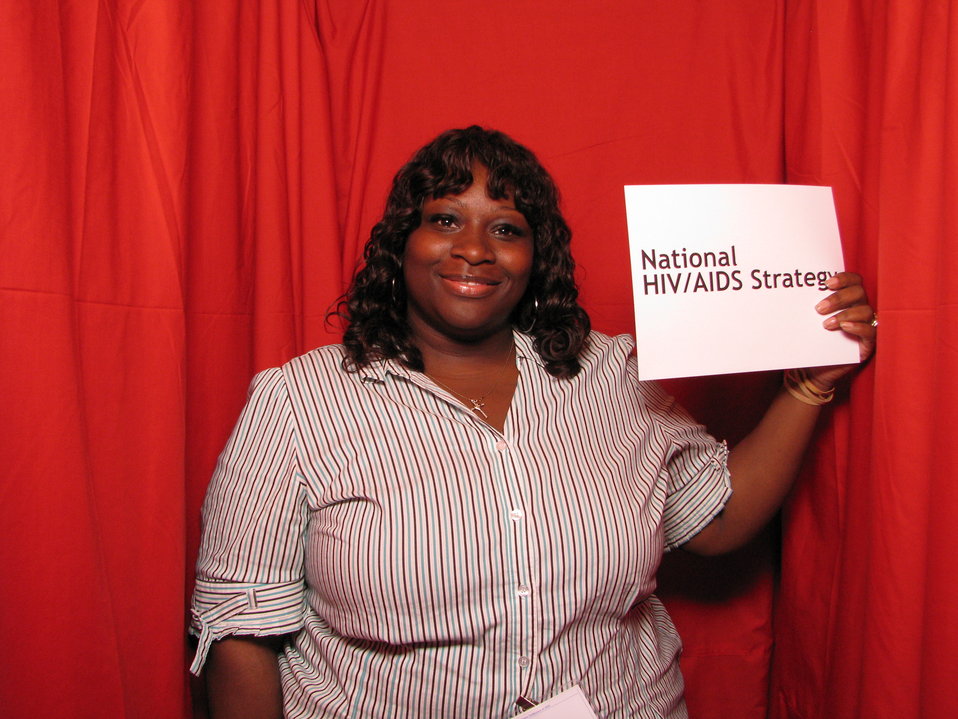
National HIV/AIDS Strategy

From the AIDS.gov photo booth at the U.S. Conference on AIDS, September 2010 (Orlando, FL).